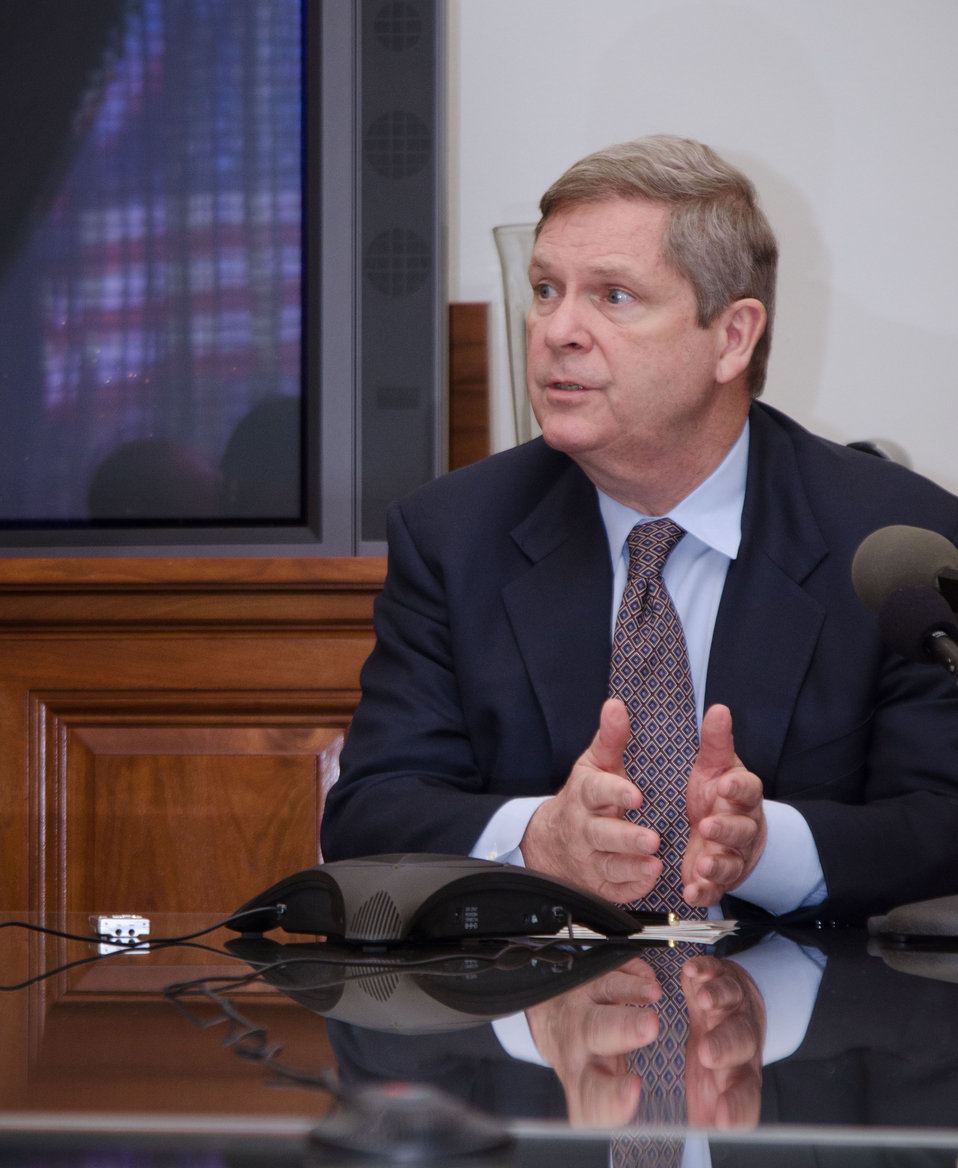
Agriculture Secretary Tom Vilsack briefed in-house reporters and held a media conference call to review the Agriculture FY2013 budget in Washington, D.C. on Monday, February 13, 2012.